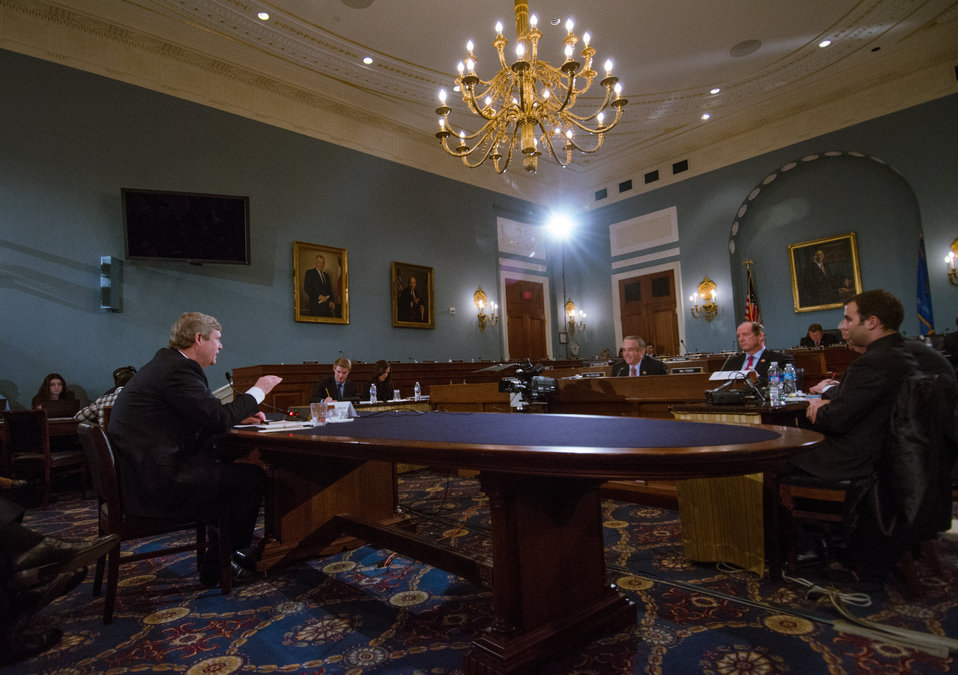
Agriculture Secretary Tom Vilsack (left) responds to a question from Representative Christopher C. Collins (NY) testifies before the House Agriculture Committee regarding the “State of the Rural Economy“ at the Longworth House Office Building in Washington, D.C. on Tuesday, Mar. 5, 2013.